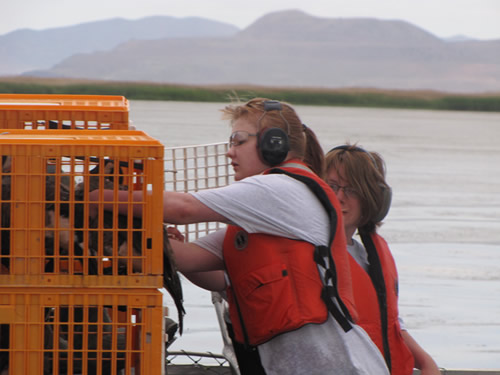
Canada geese in cages for banding

Canada geese are caught and then banded by the Utah Department of Natural Resources with help from Youth Conservation Corps crew.